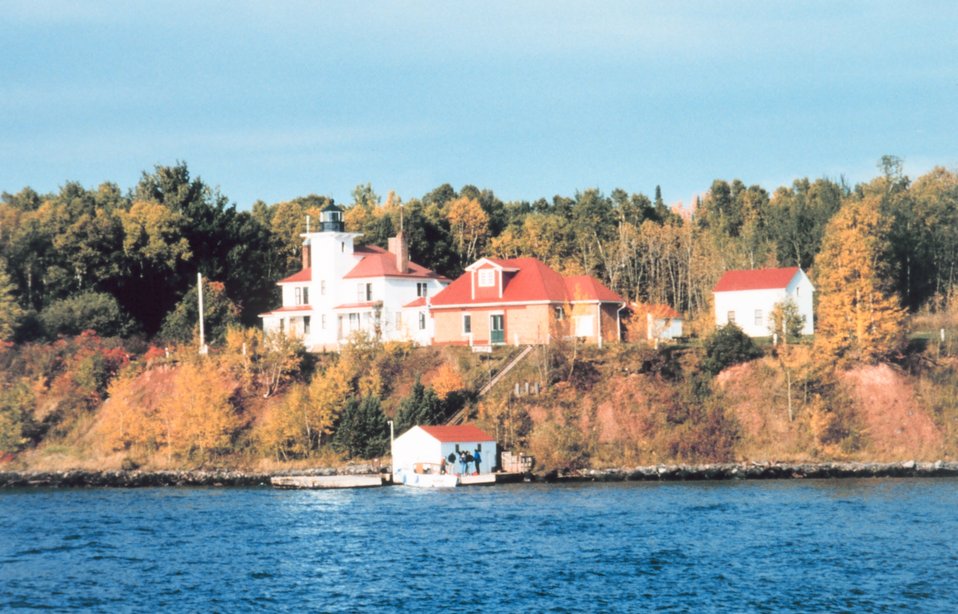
Raspberry Island Lighthouse